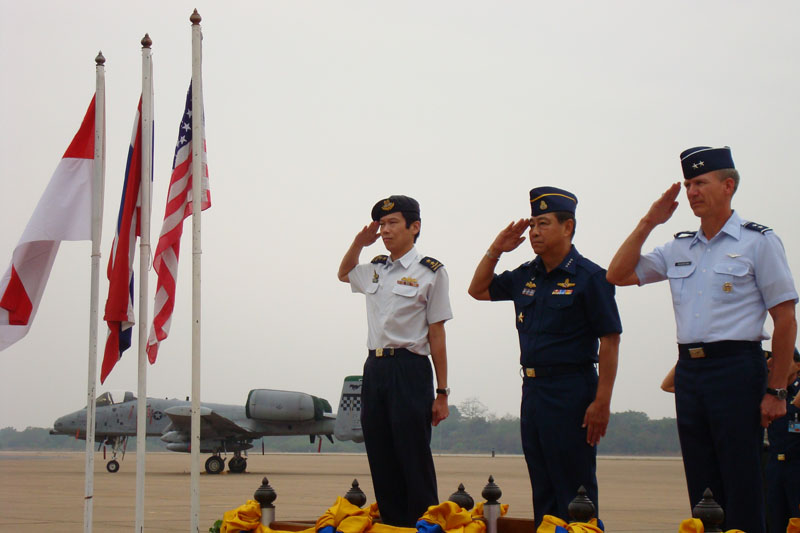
Cope Tiger wraps up in Thailand

Maj. Gen. Jeffrey Remington (right) represents the U.S. military at the official closing ceremony of Exercise Cope Tiger 2008 here Feb. 5 beside the chief of the Air Force, Republic of Singapore Air Force, Maj. Gen. Ng, Chee Khern (far left), and commander-in-chief of the Royal Thai Air Force, Air Chief Marshal Chalit Pukbhasuk. General Remington is the director of air, space and information operations at Headquarters, Pacific Air Forces.